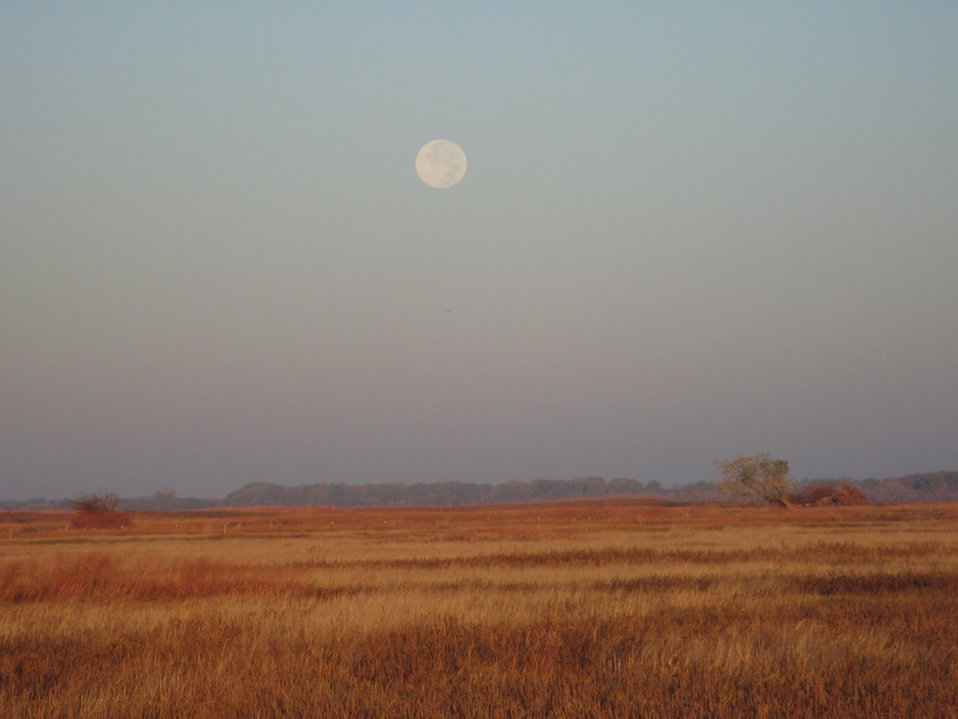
Moon Over Prairie

Sand Prairie, a unique prairie ecosystem growing on once-active sand dunes, is common throughout Quivira National Wildlife Refuge in Kansas.